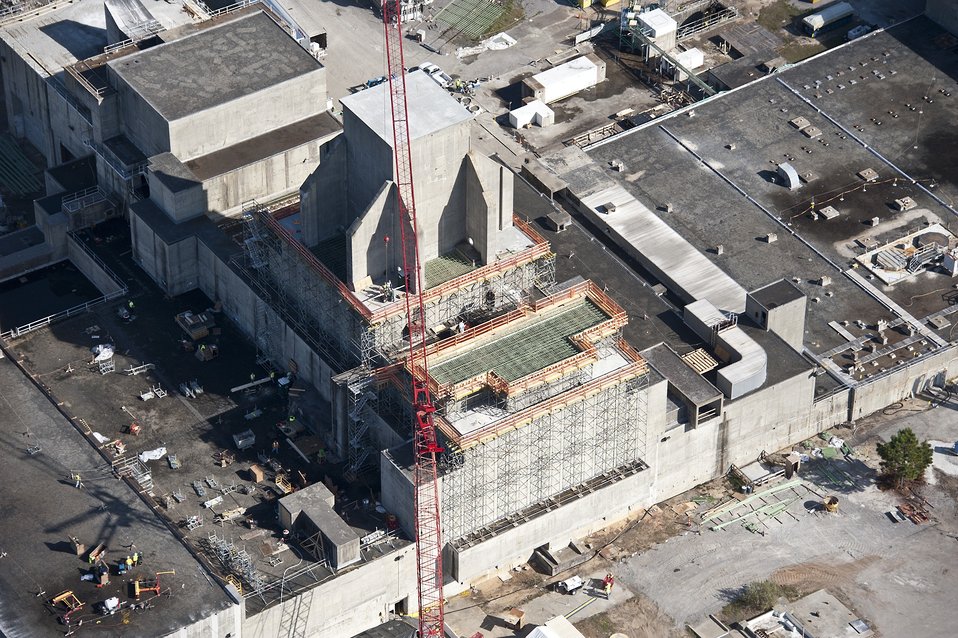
Savannah River Site Retires Reactors, Ships Waste in Remaining Recovery Act Work

Workers prepare for roof installations on portions of the P Reactor at Savannah River Site that are expected to remain after facility decontamination and demolition efforts.